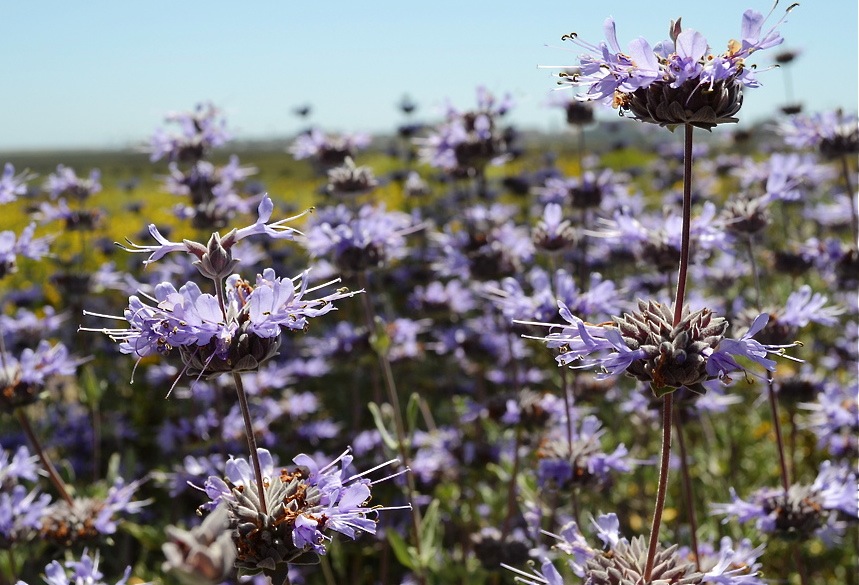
Cleveland sage in bloom

Tijuana Slough National Wildlife Refuge, CA